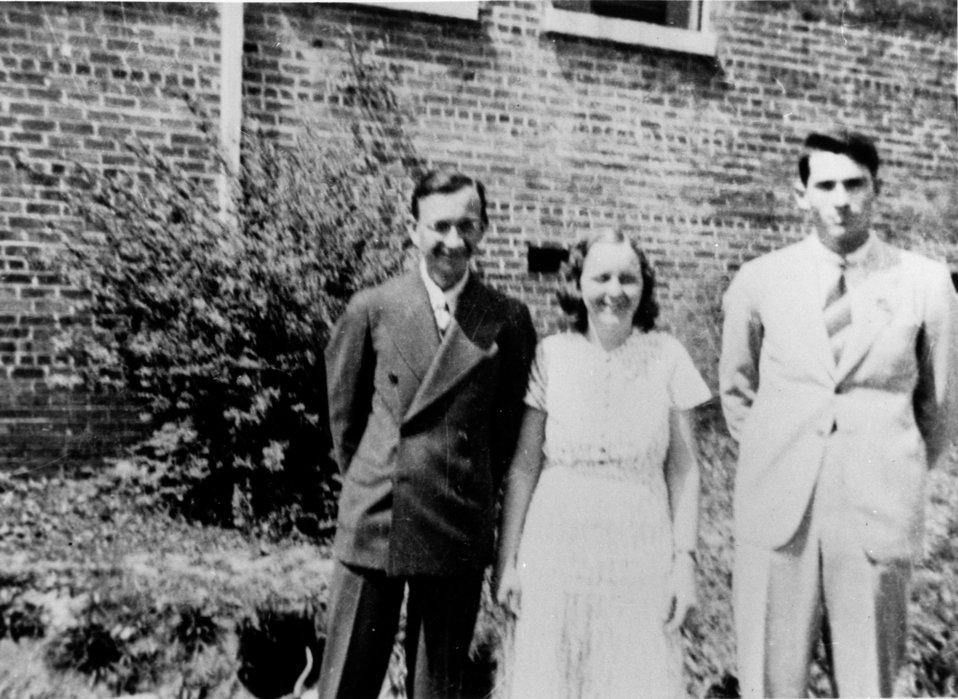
Early settlers at Oak Ridge